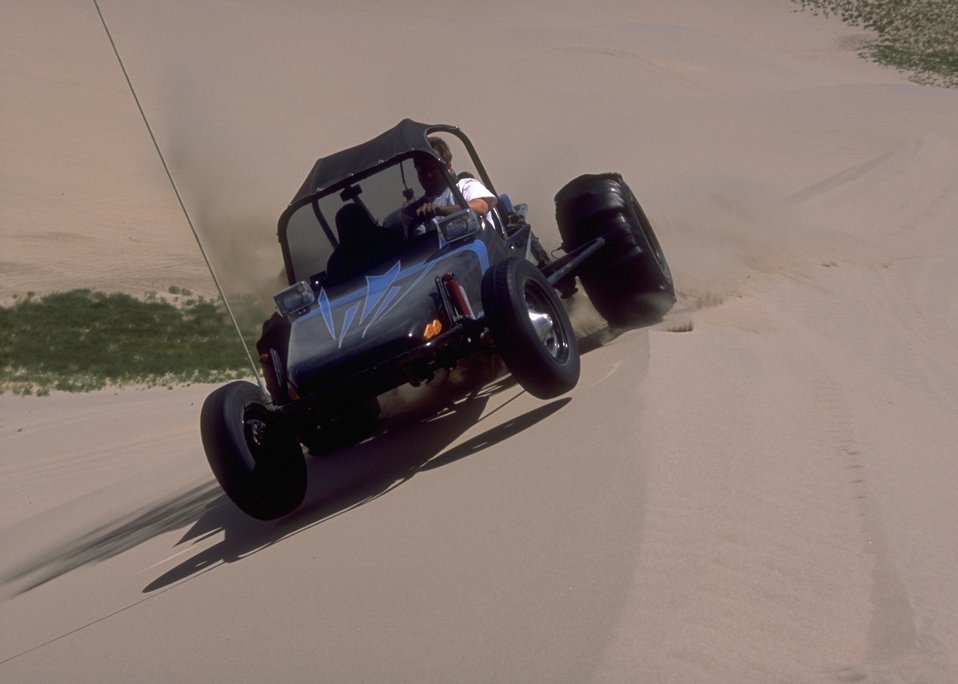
Sand Dunes OHV Area, RSFO.